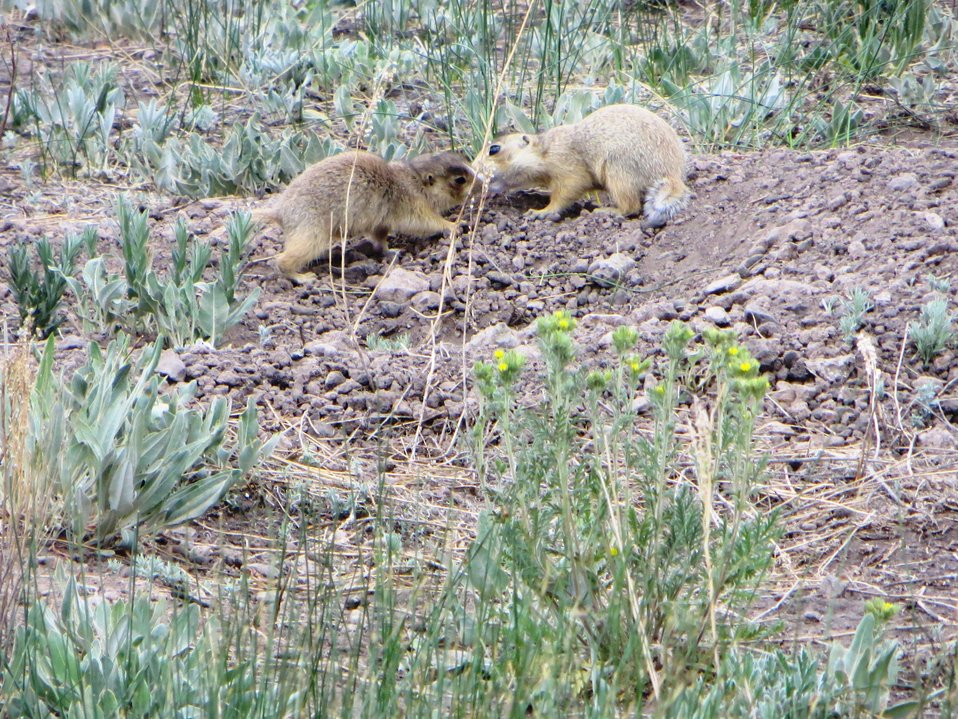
A Burned Area Emergency Response (BAER) team comes across several prairie dogs while conducting assessments of the burned area from the Thompson Ridge Fire in the Sante Fe National Forest in New Mexico. The Thompson Ridge Fire in the Sante Fe National Forest approximately 10 miles north of Jemez, NM began on May 31, 2013 by human ignition consumed over 23, 965 acres. BAER is a rapid assessment of burned watersheds by a BAER team to identify imminent post-wildfire threats to human life and safety property and critical natural or cultural resources on National Forest System lands and take immediate actions to implement emergency stabilization measures before the first major storms. Fires result in loss of vegetation exposure of soil to erosion and increased water runoff that may lead to flooding increased sediment debris flows and damage to critical natural and cultural resources. BAER team members implement seeding and mulching installation to prevent erosion, erect temporary water run-off control structures that will protect recovering areas, and installation of warning signs, replace safety related facilities, remove safety hazards, prevent permanent loss of habitat for threatened and endangered species, and prevent the spread of noxious weeds and protect critical cultural resources.